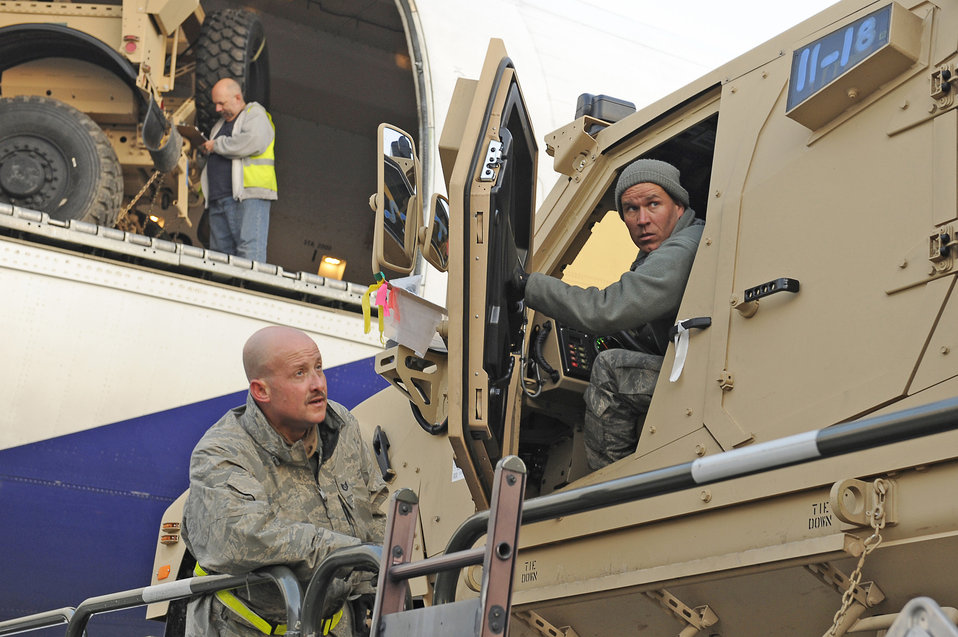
Moving the goods

Tech. Sgt. Keith Cloninger (ground) and Tech. Sgt. Mark Forman use a 25K Loader to off load a mine-resistant, ambush-protected all-terrain vehicles Jan. 13, 2010 at Bagram Airfield, Afghanistan. Sergeants Cloninger and Forman are assigned to the 455th Expeditionary Aerial Port Squadron.